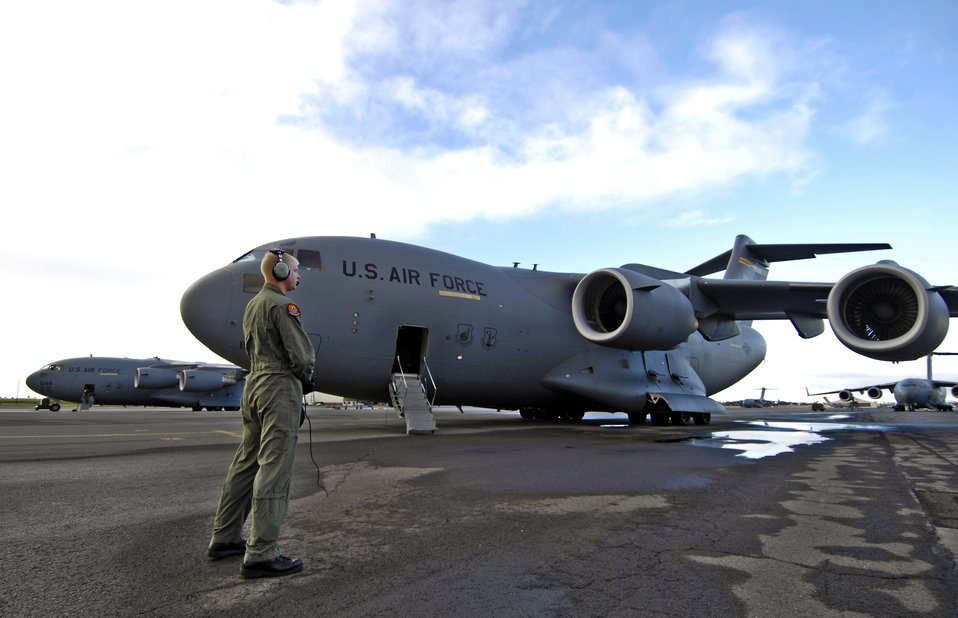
How low can they go

Staff Sgt. John Eller conducts pre-flights check on his C-17 Globemaster III Jan. 3 prior to taking off from Hickam Air Force Base, Hawaii for a local area training mission. Sgt. Eller is a loadmaster from the 535th Airlift Squadron.